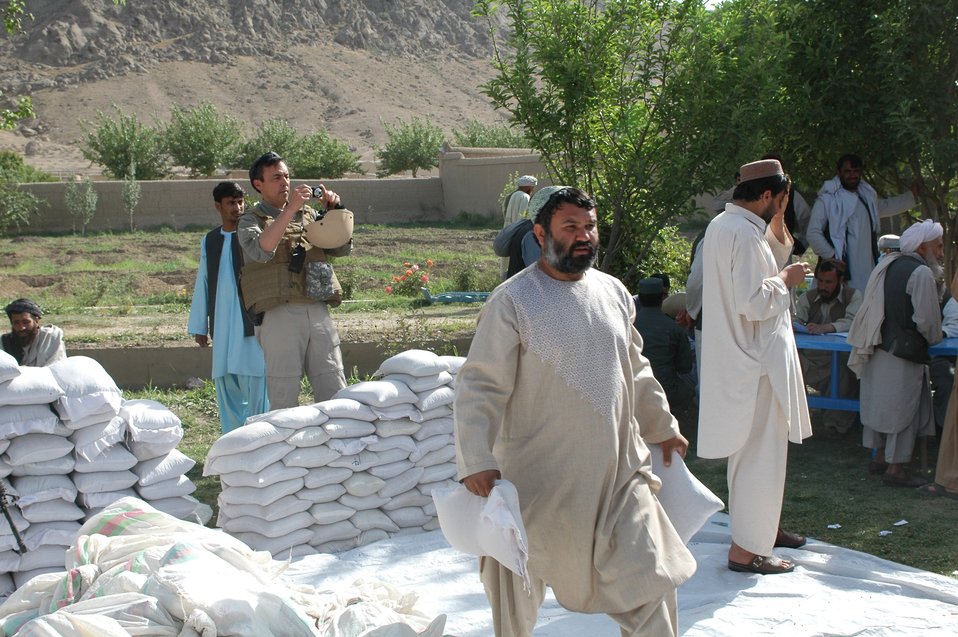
Dr Shah Visits Argandab April 10, 2010